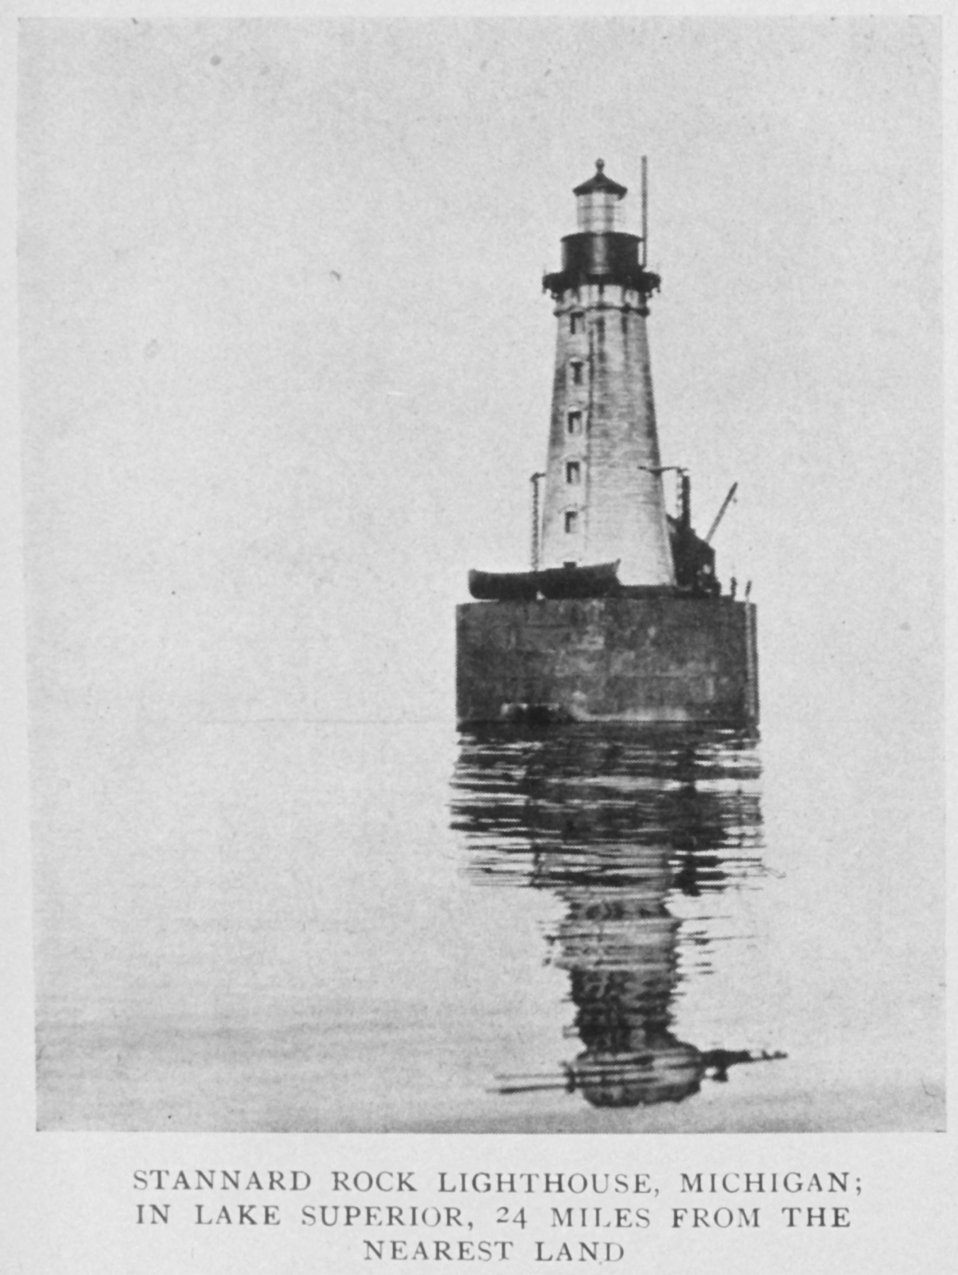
Stannard Rock Lighthouse, Michigan; in Lake Superior, 24 miles from the nearest land. In: 'Lighthouses and Lightships of the United States' by George R. Putnam , p. 158, 1917. Houghton Mifflin and Company, Boston. Library Call No. 527.7 P98.